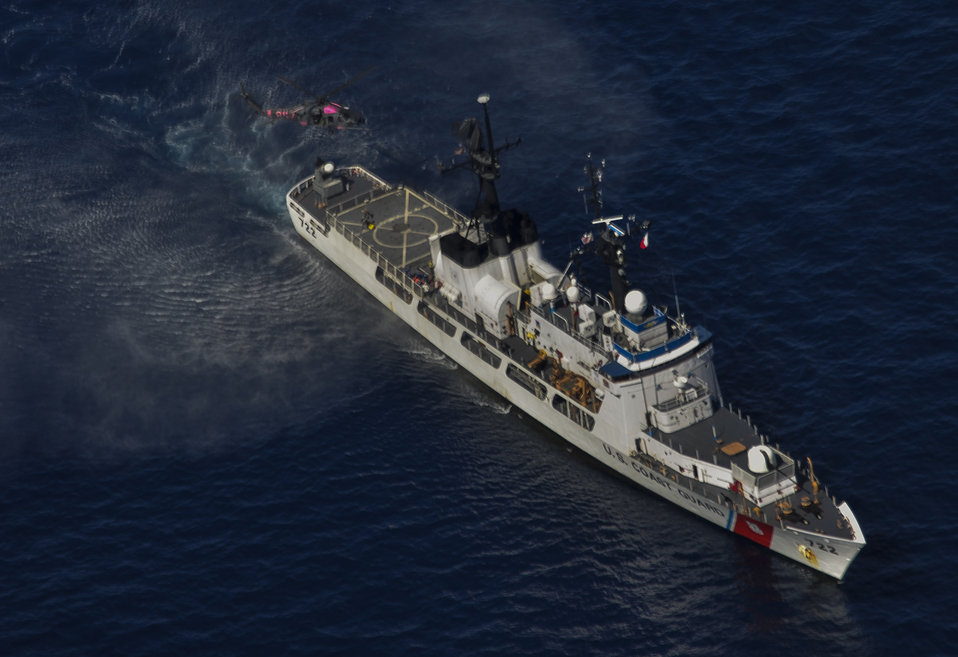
ANG Rescue

Members of the 129th Rescue Wing California Air National Guard assist in the rescue operations of two injured fisherman approximately 1400 miles off the coast of Acapulco, Mexico on Sept. 5, 2012.